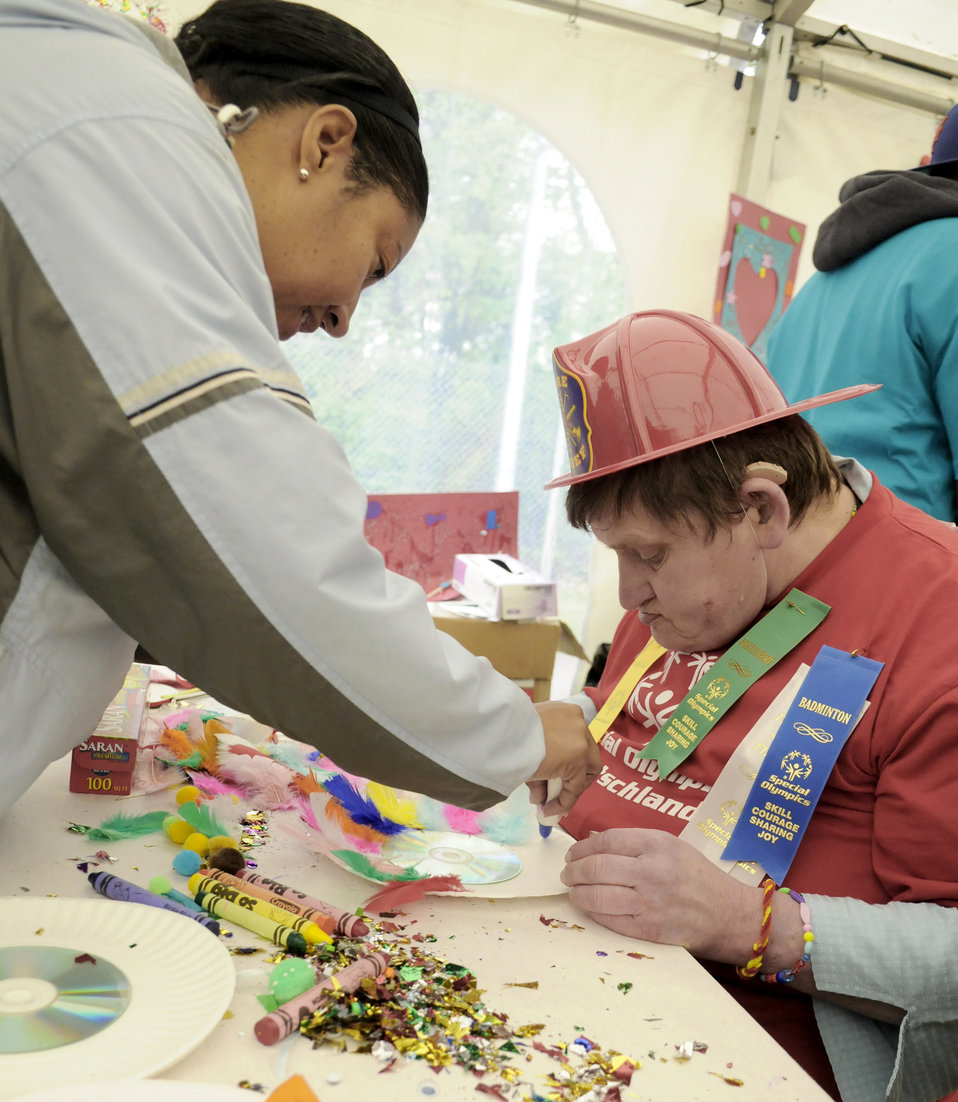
Airmen support German-American Special Olympics

Tammie Honore assists an athlete in an arts and crafts section May 12, 2010, during the Special Olympics in Enkenbach-Alsenborn, Germany. The Special Olympics is a worldwide event for children and adults with disabilities to build confidence and foster friendship. The Kaiserslautern Military Community hosted its 27th Annual Special Olympics for more than 800 athletes. Ms. Honore is a Ramstein Middle School teacher.